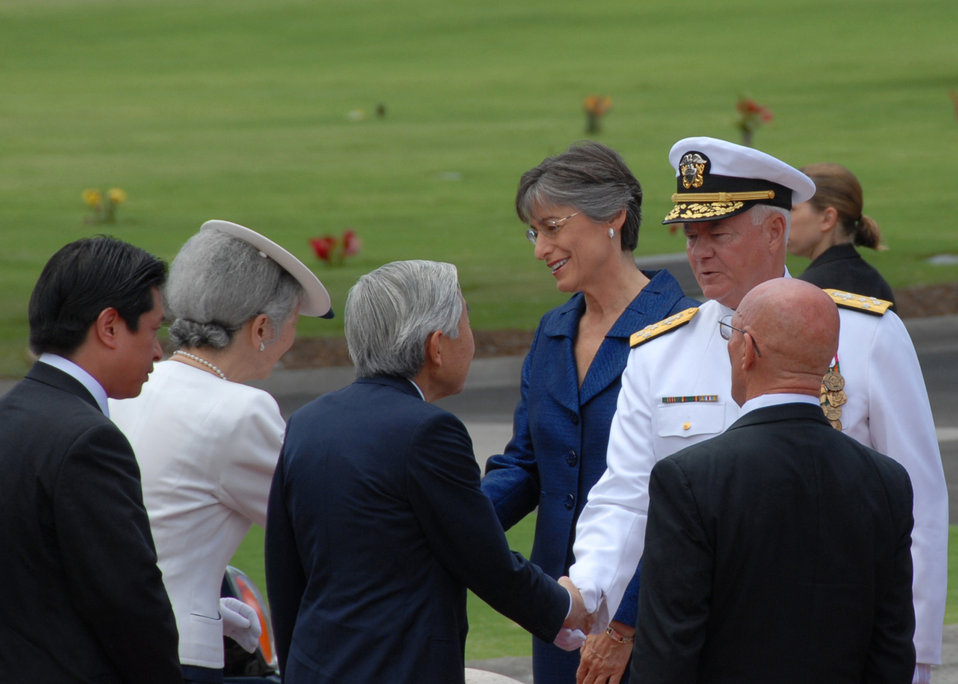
Japanese royalty honors America's fallen

Adm. Timothy Keating, U.S. Pacific Command commander, greets the Emperor of Japan July 15 at the National Memorial Cemetery of the Pacific at Punchbowl Crater, Hawaii, July 15. Emperor Akihito and Empress Michiko paid tribute to those interred at the cemetery by laying a chrysanthemum wreath. More than 50,000 service men and women are interred at the cemetery.